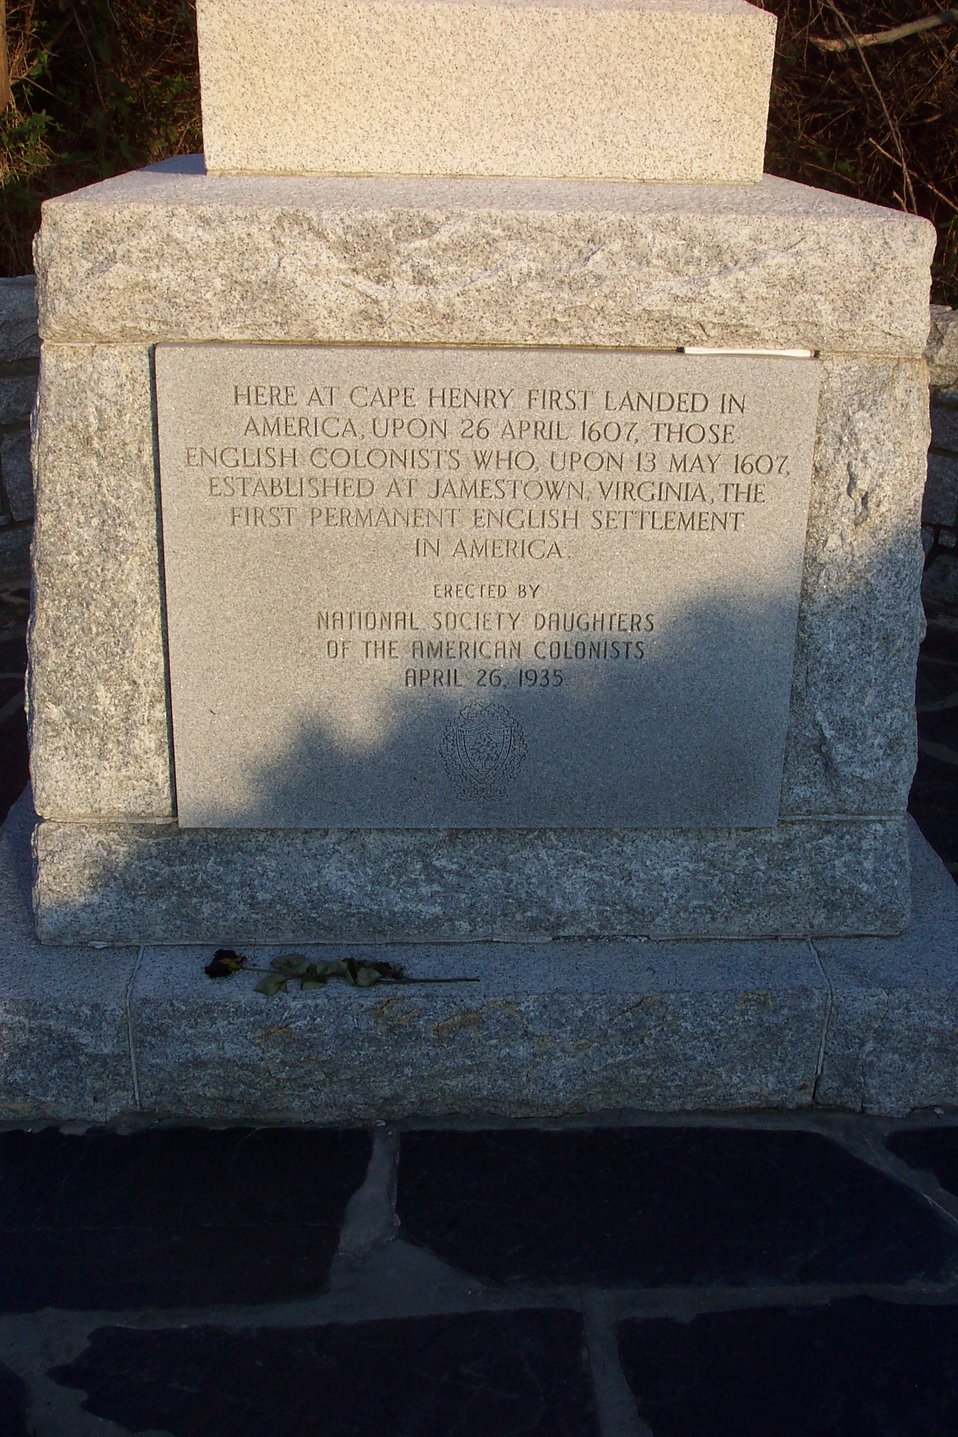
Close-up view of plaque commemorating first English colonists who landed at Cape Henry on April 26, 1607.